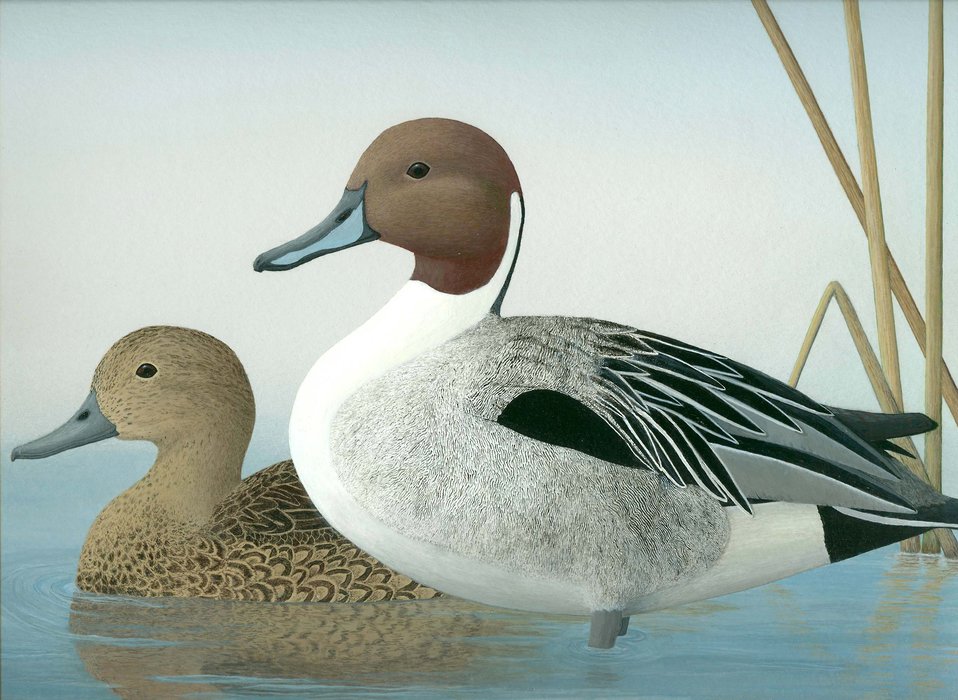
Arkansas

2012 Jr Duck Stamp Program
State Best of Show
Arkansas